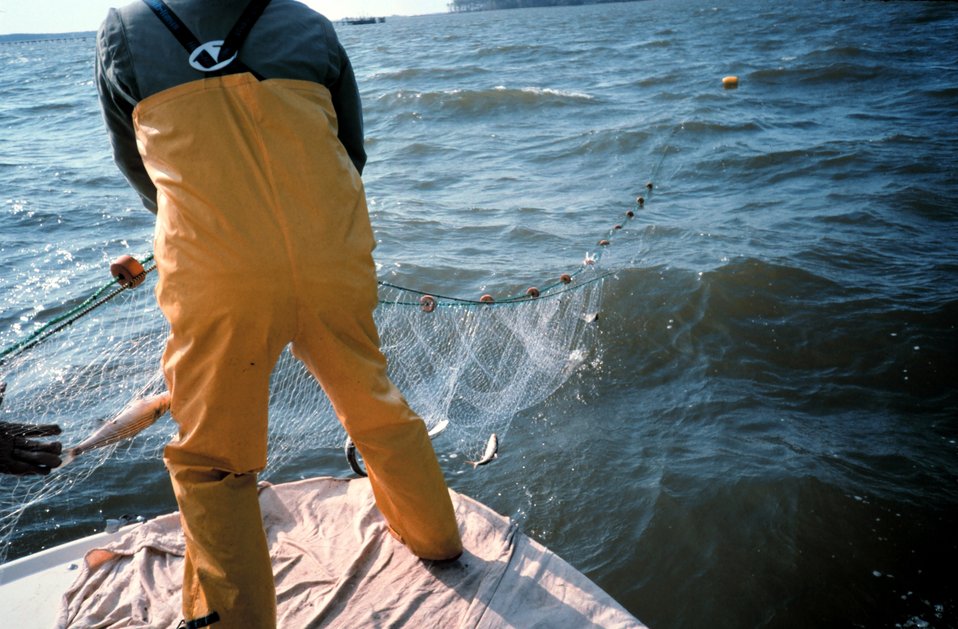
retrieving gillnets